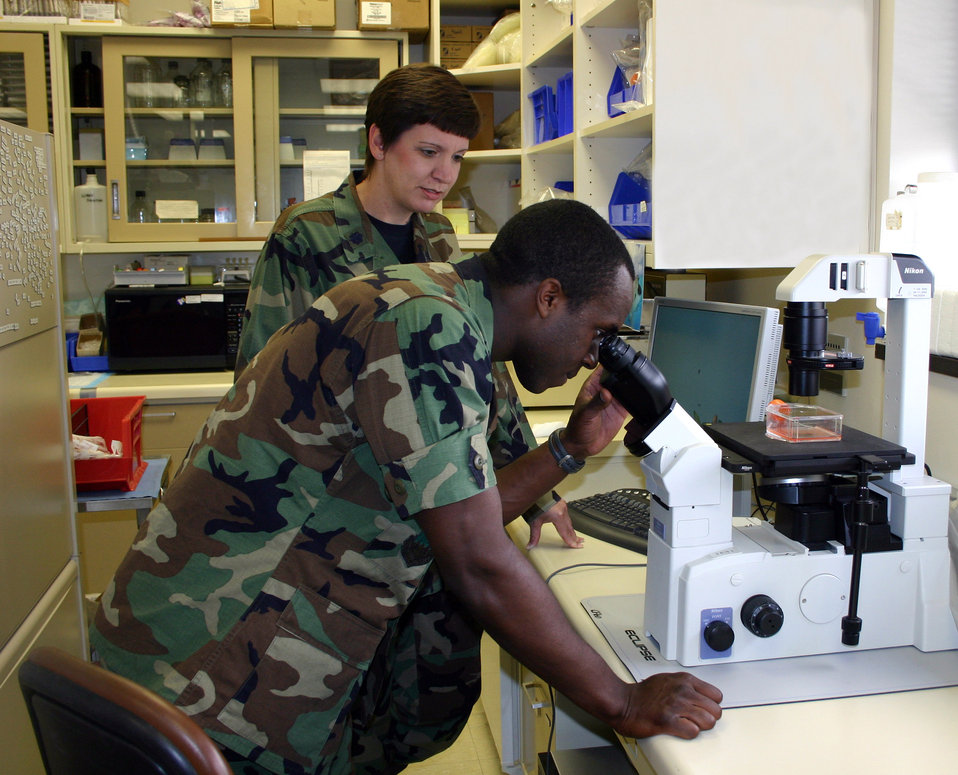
Future of Air Force Medical Service train at Wilford Hall

Cadet 1st Class Bryan Lawson looks at a cell culture through a microscope with Lt. Col. Marla Dejong at Wilford Hall Medical Center at Lackland Air Force Base, Texas, on Wednesday, July 5. Cadet Lawson is a student in the Cadet Summer Research Program, and is a biochemistry major at the U.S. Air Force Academy. Colonel Dejong is the 59th Clinical Research Squadron director of nursing research.